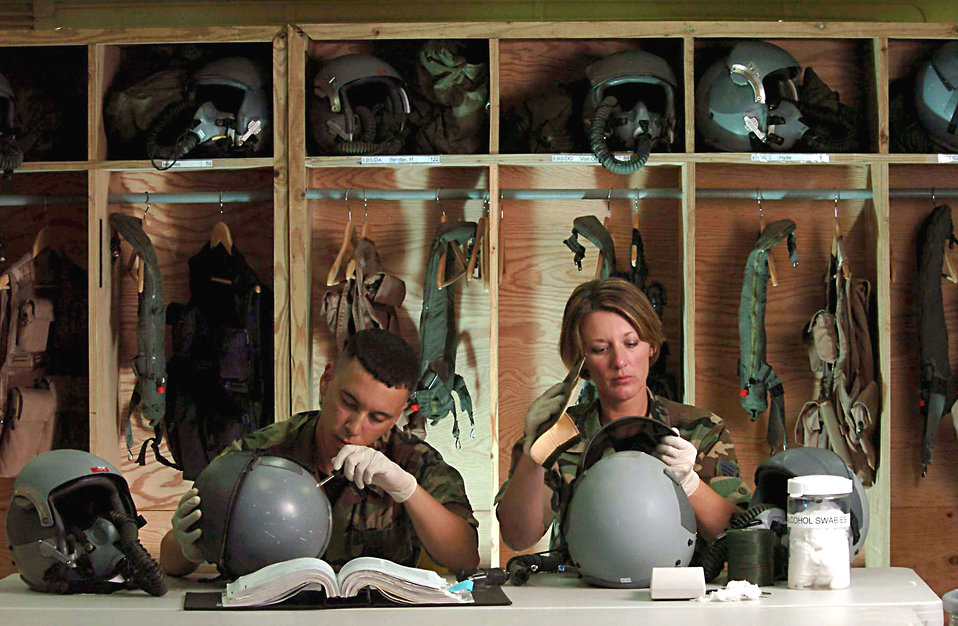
Minot B-52 ground crews deployed at Guam

ANDERSEN AIR FORCE BASE, Guam -- Staff Sgt. Terilyn Morrison (right) and Airman Felipe Maymi-Baez inspect helmets belonging to B-52 Stratofortress aircrews here. Sergeant Morrison and Airman Maymi-Baez are both life-support technicians from the 5th Bomb Wing at Minot Air Force Base, N.D. The wing is the first rotation to deploy to Guam following the decision to station a bomber force here.